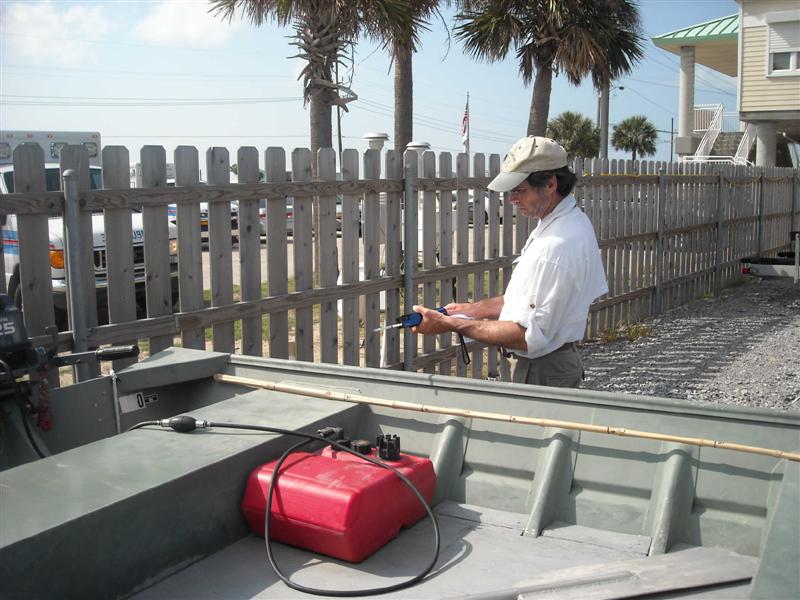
Air Monitoring Equiment Along the Gulf Coast

Monitoring for oil related compounds along the Gulf coast